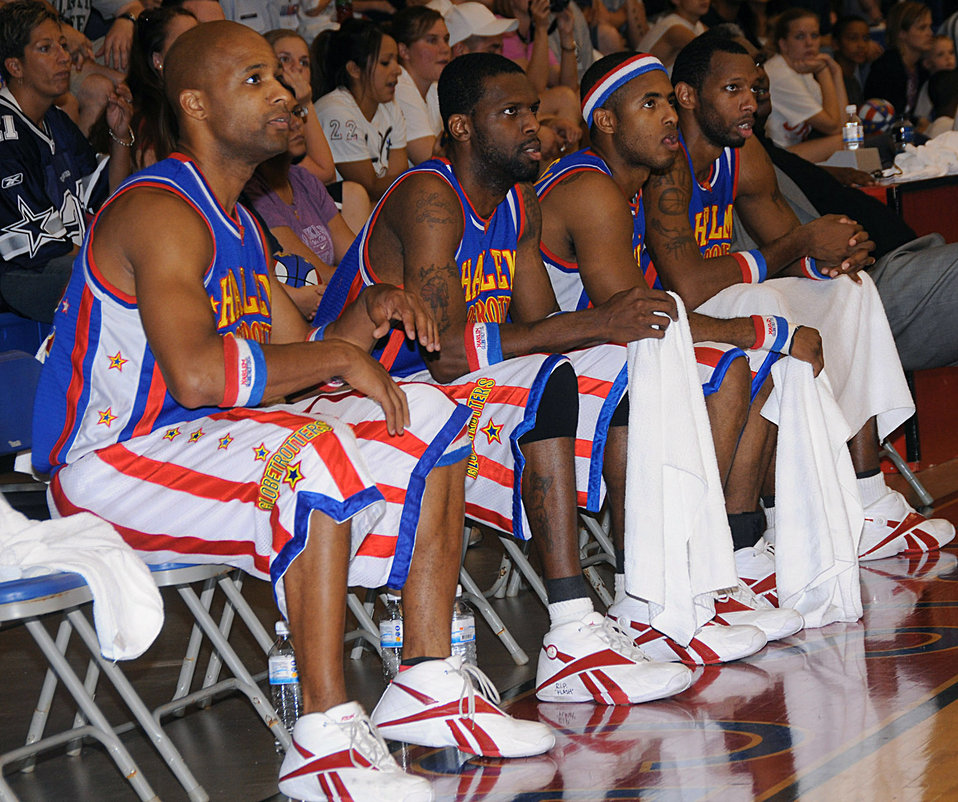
Harlem Globetrotters put on a show at Andersen

Harlem Globetrotters look on as their teammates battle the Washington Generals Dec. 15 at Andersen Air Force Base, Guam. The Globetrotters have been undefeated for 83 years.